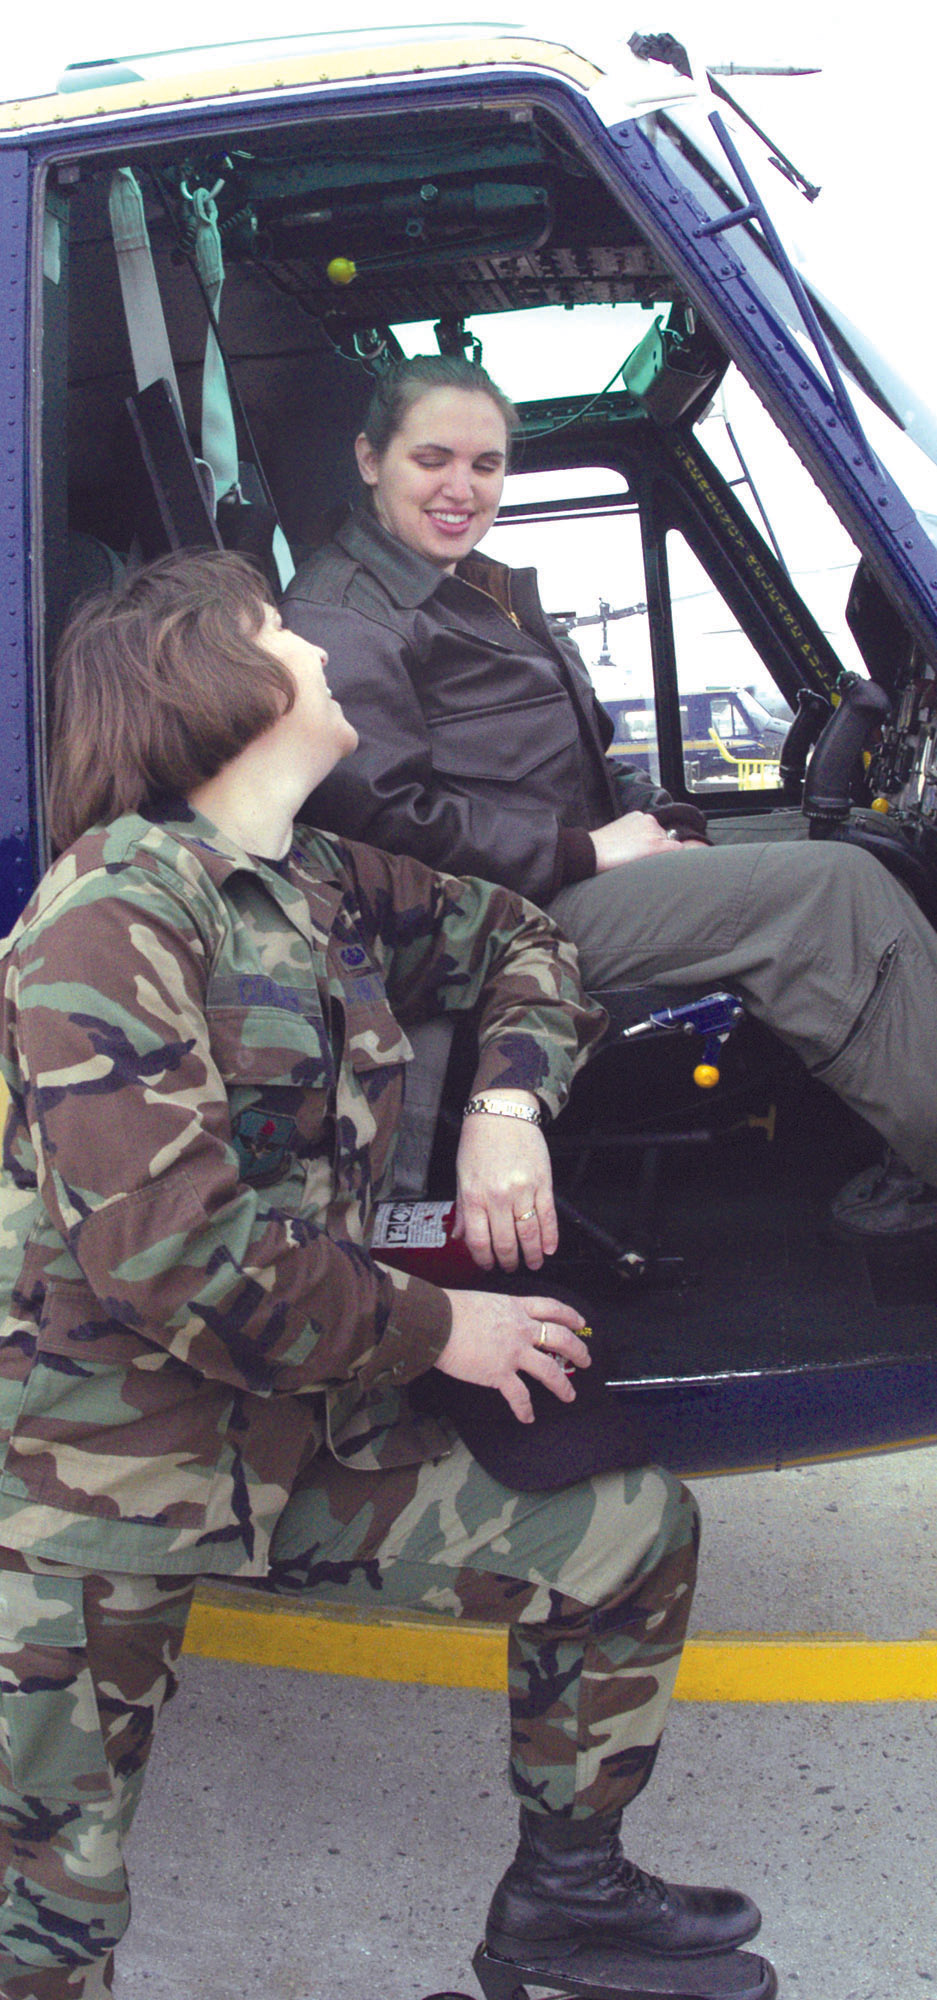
Mother, daughter reunite

ANDREWS AIR FORCE BASE, Md. (AFPN) -- Col. LeEllen Coacher, 89th Airlift Wing Staff Judge Advocate, is given an aircraft orientation of the UH-1N helicopter by her daughter Capt. Kacey L. Grannis, 1st Helicopter Squadron pilot, during a visit to the 1 HS recently. This is the first time this mother and daughter have been assigned to the same base.